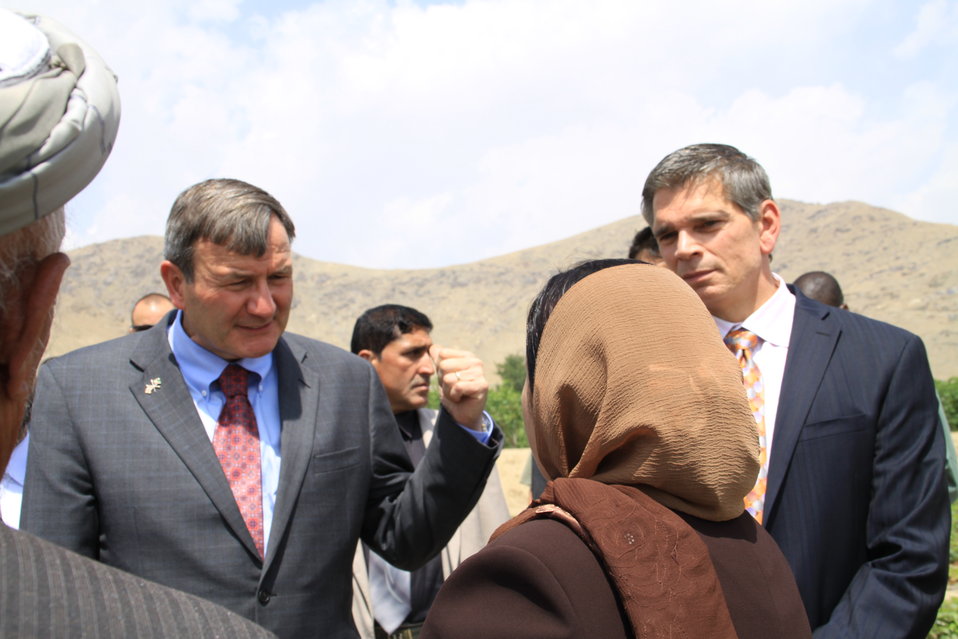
Badam Bagh Farm